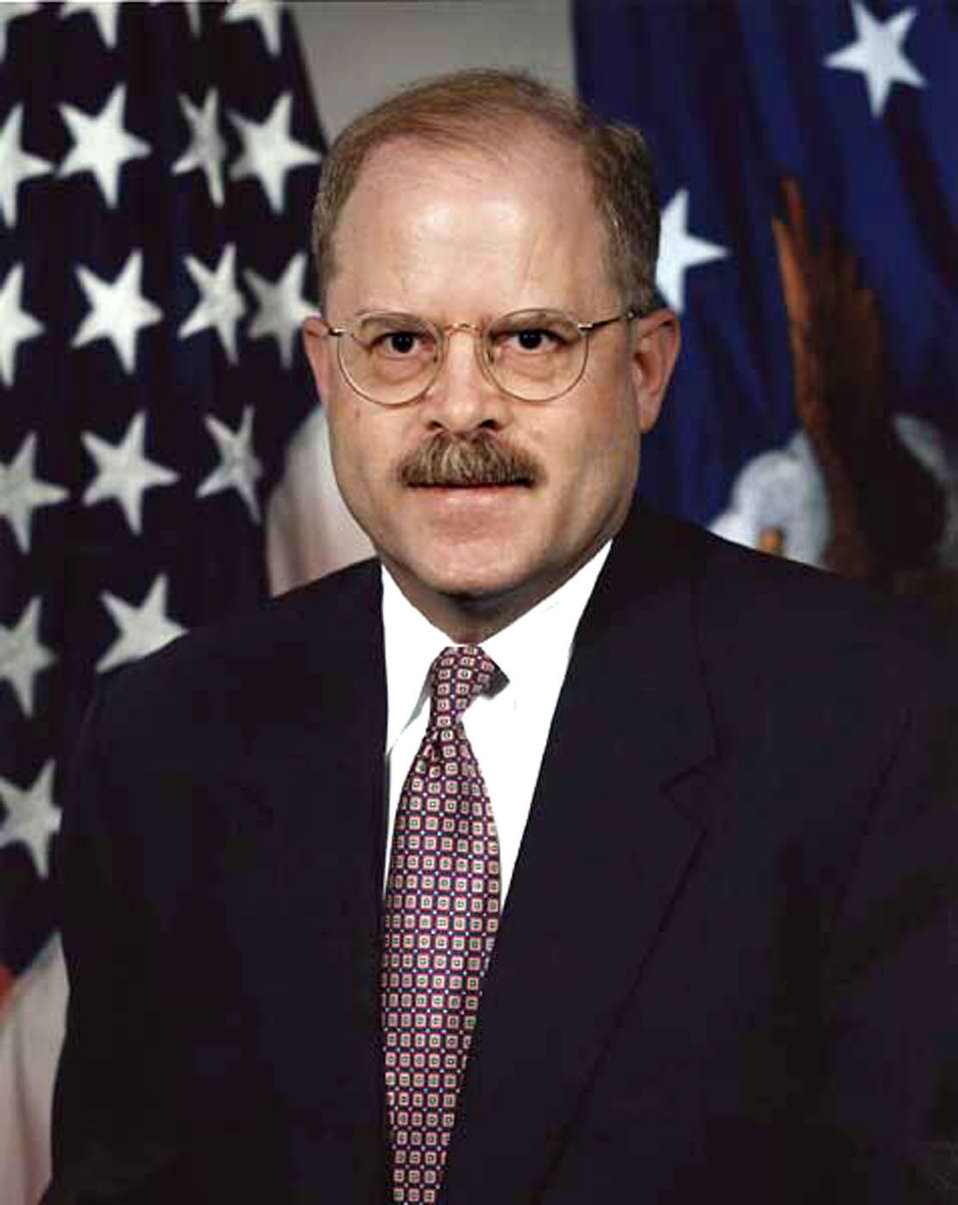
F. Whitten Peters

1990's -- F. Whitten Peters was the 19th secretary of the Air Force sworn in July 1999. For 19 months he wore two hats, as undersecretary of the Air Force and acting secretary, surpassing the record for longest tenure as acting secretary.